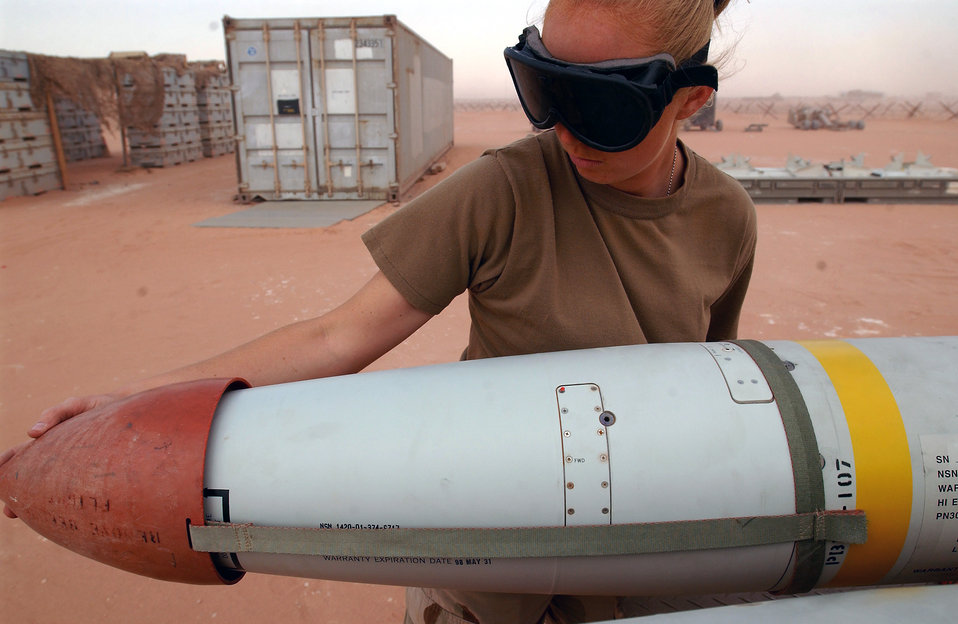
Jones

OPERATION IRAQI FREEDOM -- Senior Airman Lisa Jones puts a protective cover on a missile at a forward-deployed air base supporting Operation Iraqi Freedom. Jones, a munitions specialist with the 363rd Expeditionary Equipment Maintenance Squadron, and other munitions troops supporting Operation Iraqi Freedom are working around the clock to build munitions to keep the coalition air campaign going.